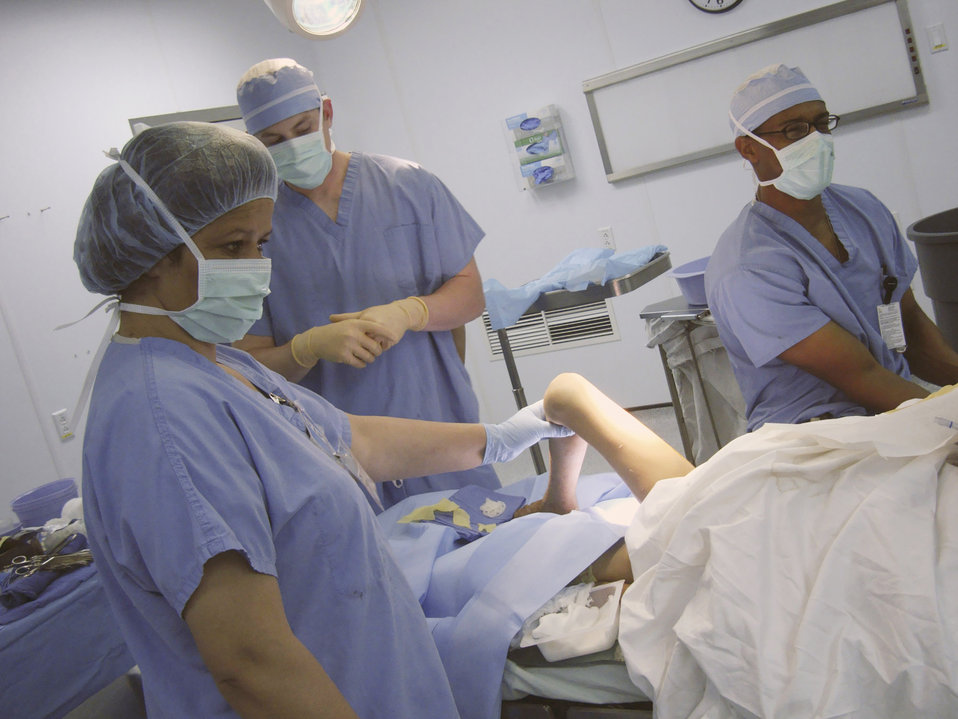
Craig Joint Theater Hospital helps build Afghan nursing foundation

Afghan National Army soldier Malika Faqiri (left) a female assists with a patient about to undergo surgery Oct. 14, 2009, at Bagram Airfield, Afghanistan. She attended a special two-week mentorship program at the Craig Joint Theater Hospital here to work alongside U.S. doctors and nurses to hone her medical skills and get firsthand experience with trauma-based care. She was one of the first women to ever attend the program.